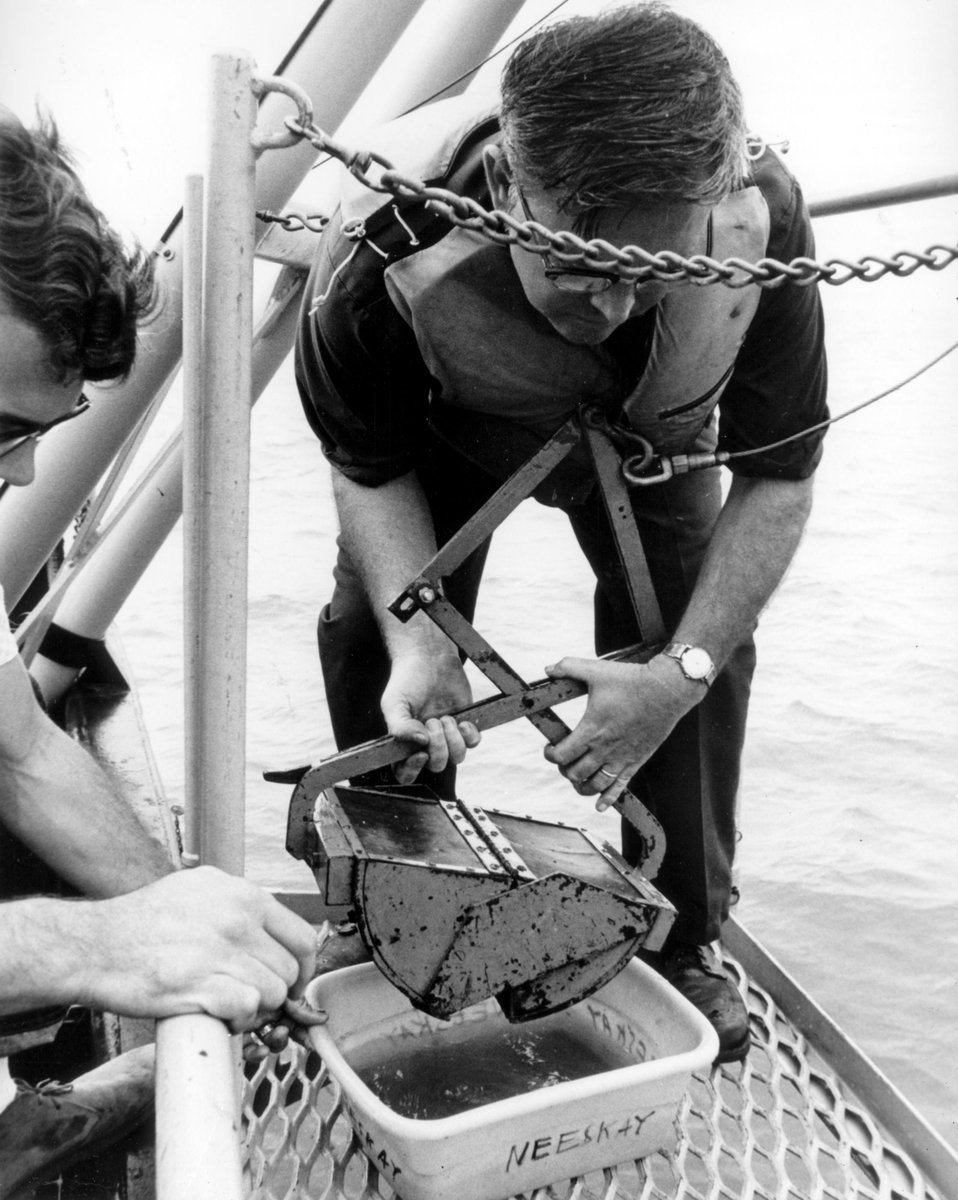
Following a 'ponar grab', the samples of sediments from the bottom of Lake Michigan is brought aboard a U of Wisconsin-Milwaukee research vessel.
c.1972